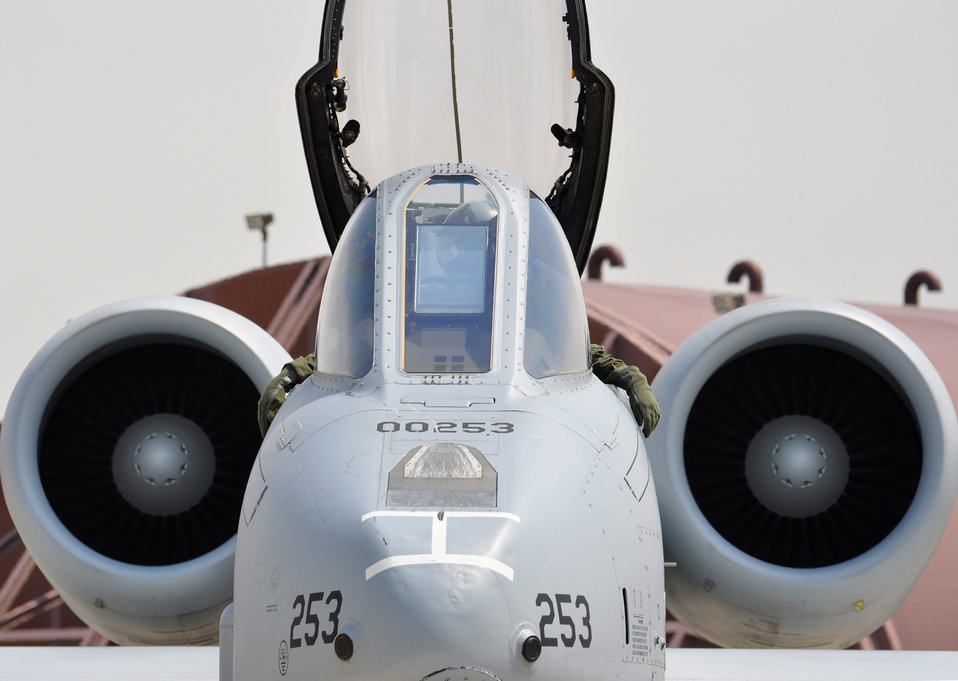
A-10s return

An A-10 Thunderbolt II sits on the flightline April 21, 2011, at Osan Air Base, South Korea, after returning from an exercise.